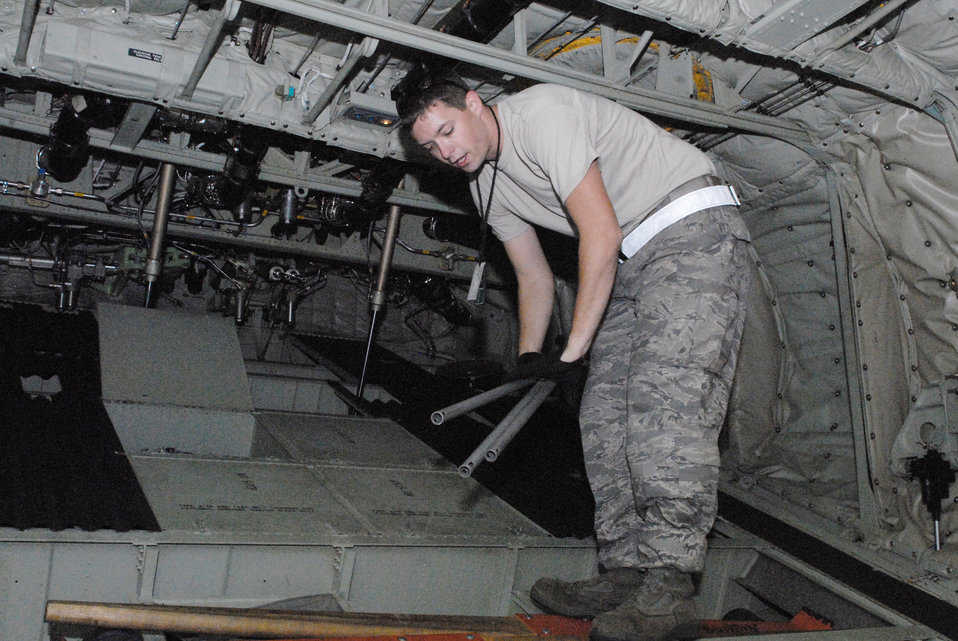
Little Rock officials lead joint force training effort at exercise

Senior Airman William Heptig stows jump cables during the preflight maintenance of a C-130 Hercules as part of Joint Forcible Entry Exercise 10-01 Oct. 28, 2009, at Pope Air Force Base, N.C. The JFEX focused on cohesive training between the Air Force and Army to re-establish forcible entry capability through airpower. Airman Heptig is a 19th Aircraft Maintenance Squadron crew chief from Little Rock AFB, Ark.